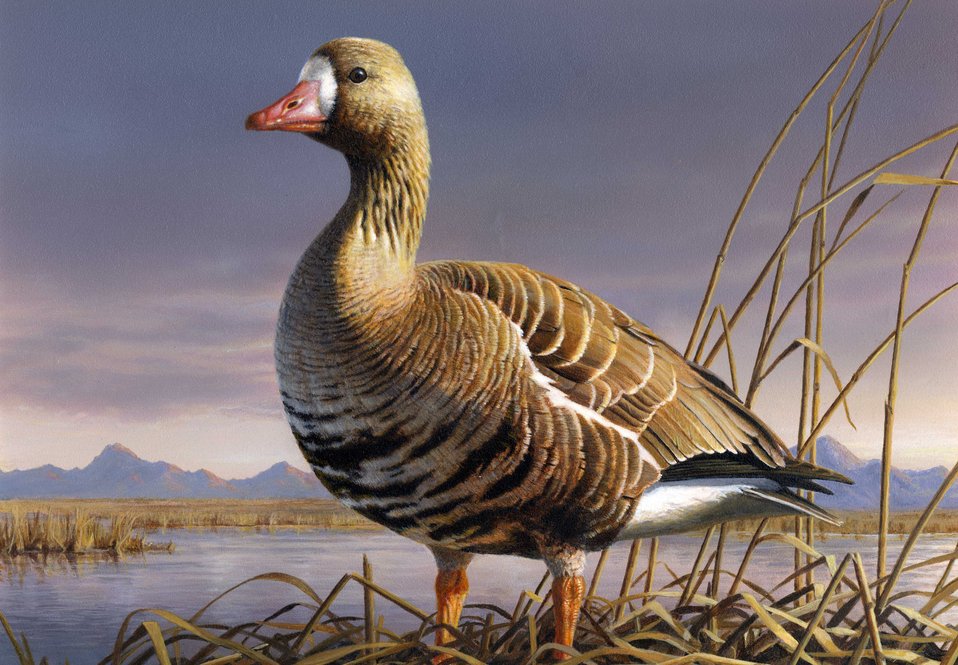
Painting by Robert Hautman, 2nd Place.

White fronted goose on acrylic by Robert Hautman, Delano, Minnesota.